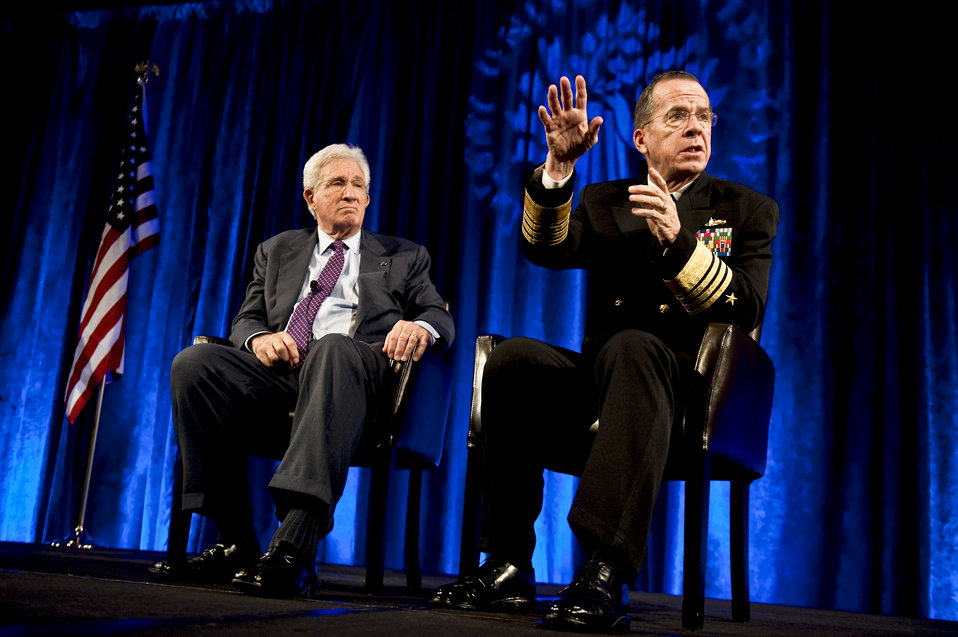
Mullen: Military lags in support of women warriors

Chairman of the Joint Chiefs of Staff Navy Adm. Mike Mullen and Richard H. Solomon answer questions from the audience Nov. 4, 2010, at the U.S. Institute of Peace Women and War Conference in Washington, D.C.. The conference recognizes the 10th Anniversary of U.N. Security Council Resolution 1325, which requires parties in conflicts to respect women's rights and participation in post-conflict reconstruction and peace negotiations. Mr. Solomon is the president, U.S. Institute of Peace.